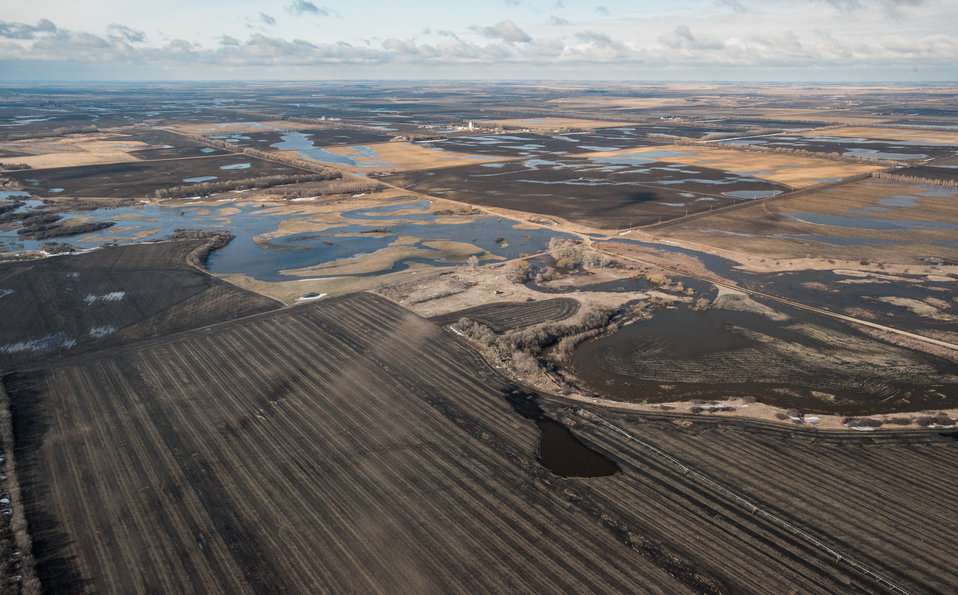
Proposed Dam site #10, on Turtle River Watershed in Grand Forks County, ND, part of the Red River basin, on Wednesday, May 1, 2013. To learn about the Red River Basin Initiative, see www.mn.nrcs.usda.gov/news/features13/RRBI.html.